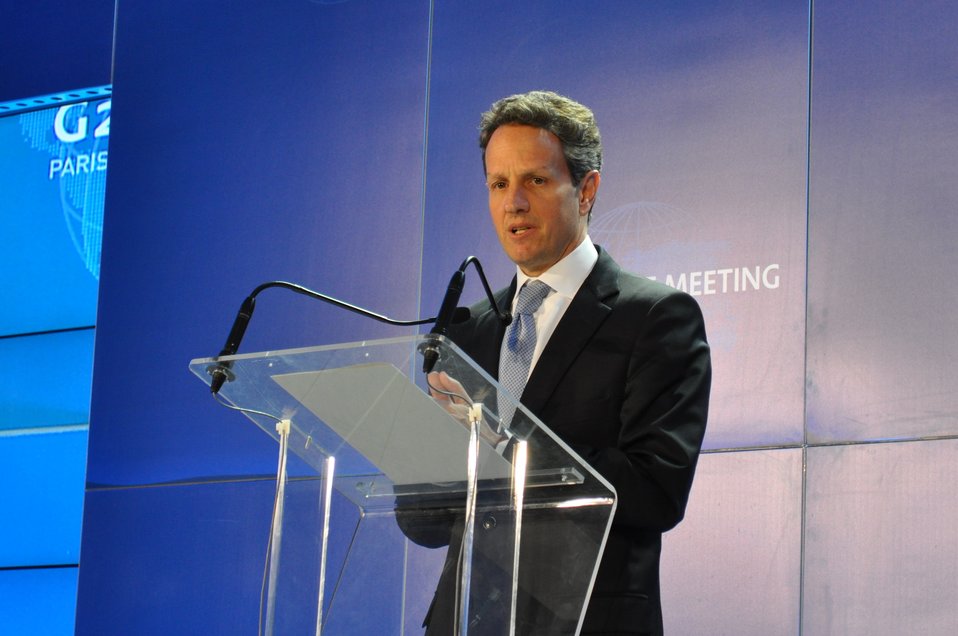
G-20 Meeting of Finance Ministers and Central Bank Governors in Paris, 02/19/2011

Secretary Geithner speaking at a press conference at the conclusion of the G-20 Meeting of Finance Ministers and Central Bank Governors held in Paris, France.